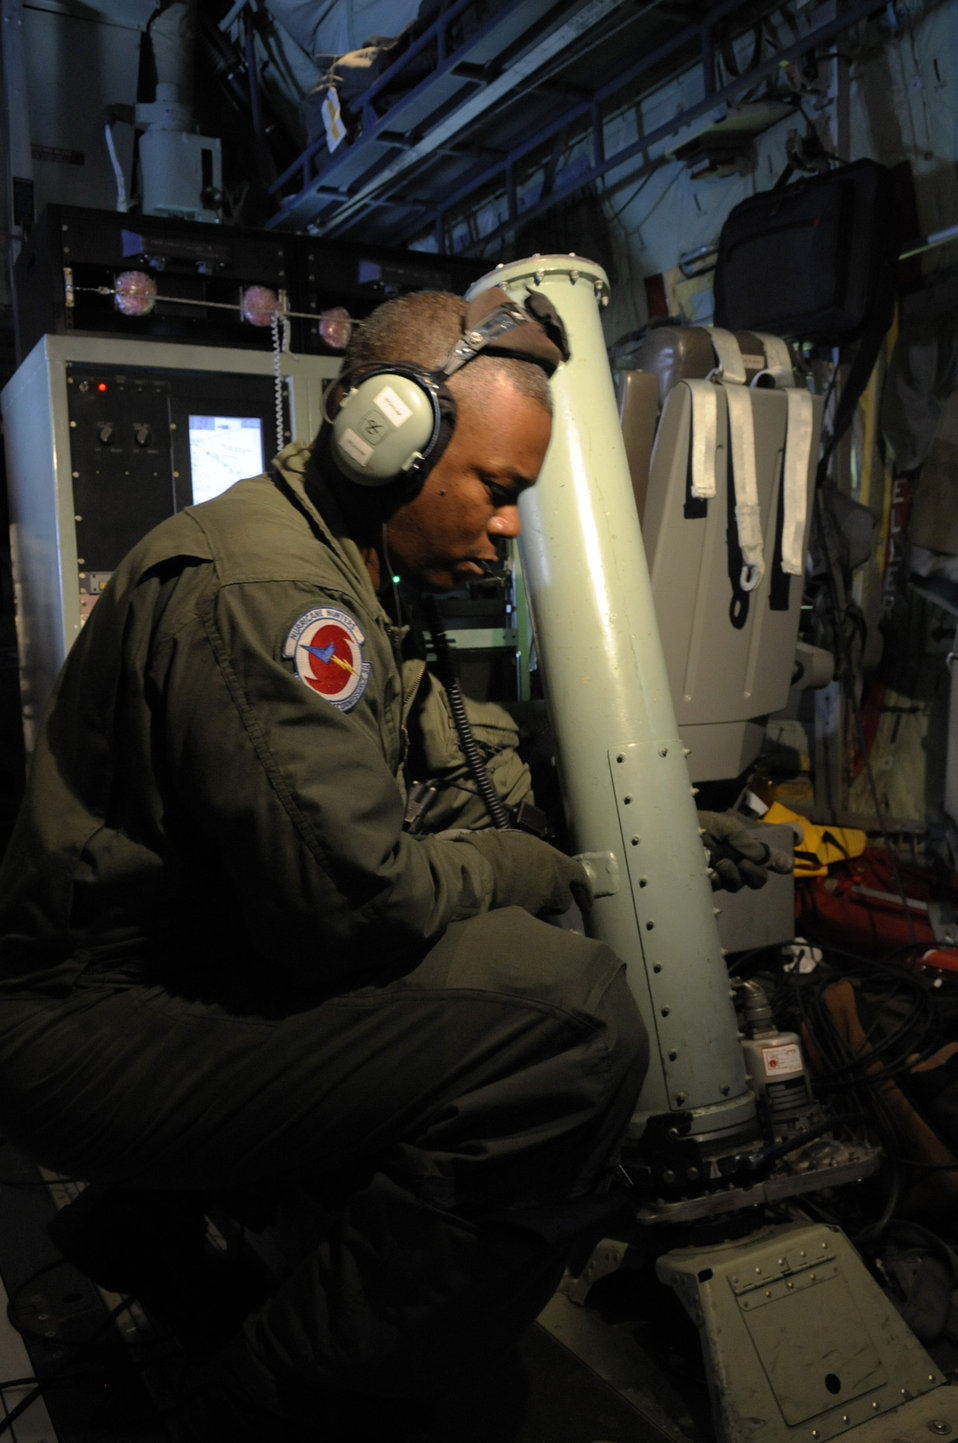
More than a loadmaster

Tech. Sgt. Troy Bickham loads a dropsonde in the launch chute on a training mission June 6 to St. Croix, V.I. on a WC-130J Hercules from Keesler Air Force Base, Miss. Sergeant Bickham is a weather reconnaissance loadmaster assigned to the 53rd Weather Reconnaissance Squadron. The training mission prepared the Air Force Reserve Command's